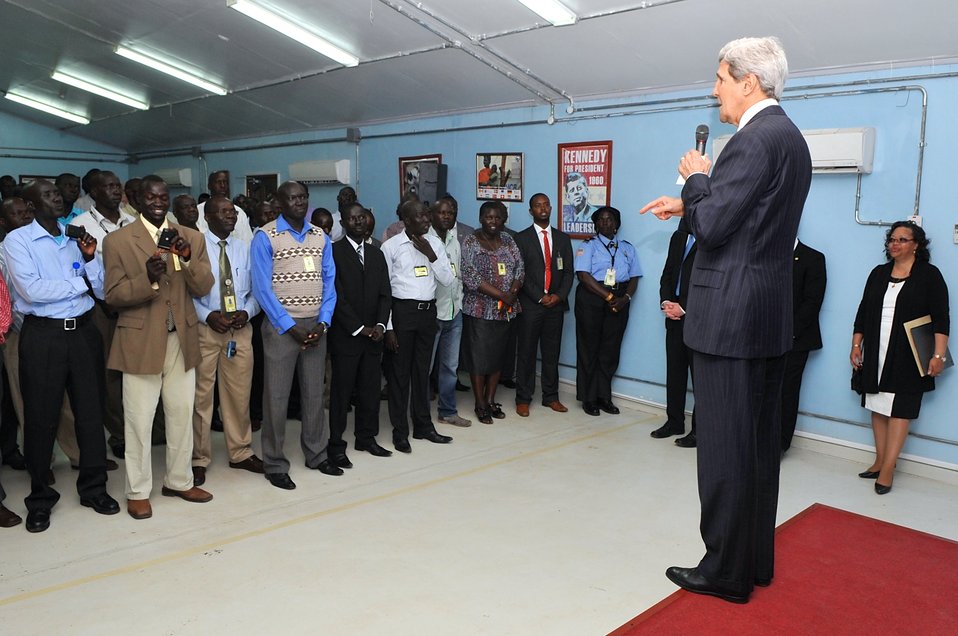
Secretary Kerry Addresses Locally Employed Staff at Embassy Juba

Local residents who work at the U.S. Embassy in Juba, South Sudan, listen to U.S. Secretary of State John Kerry as he speaks to them in their compound cafeteria following his meeting with President Salva Kiir Mayardit in Juba on May 2, 2014.